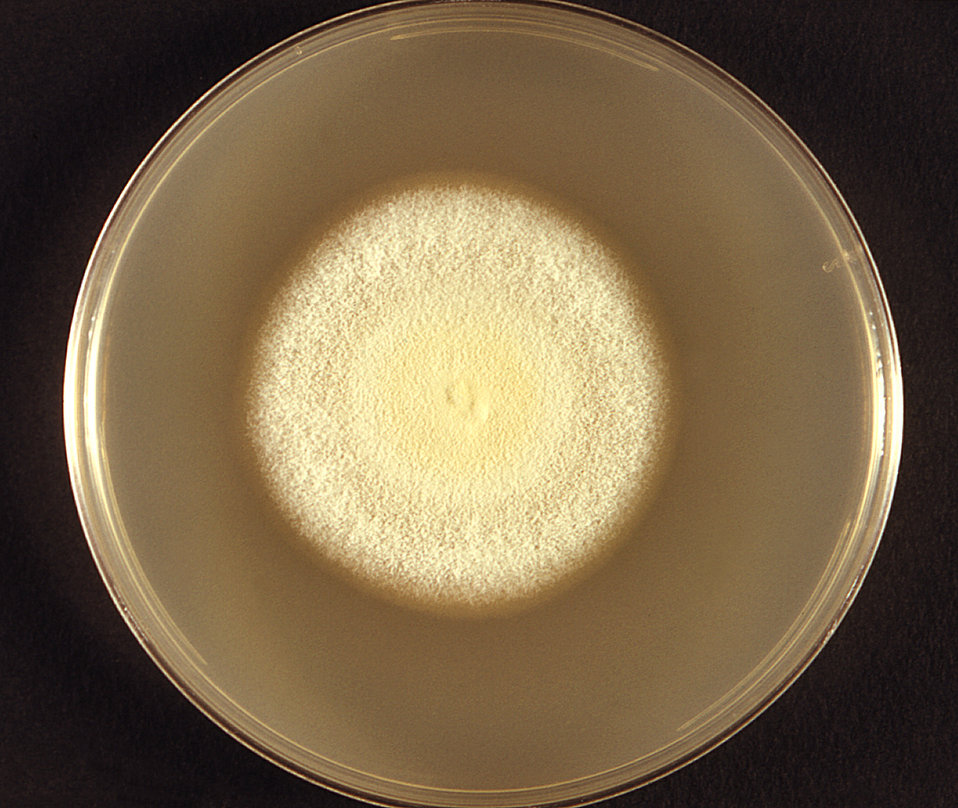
This photomicrograph revealed some of the morphology exhibited by a Trichophyton tonsurans fungal colony. Note the glaborous, or smooth velvety appearance of this colony, and early changes at its center, which in time will lead to its characteristically raised appearance, as well as its yellowish-beige coloration